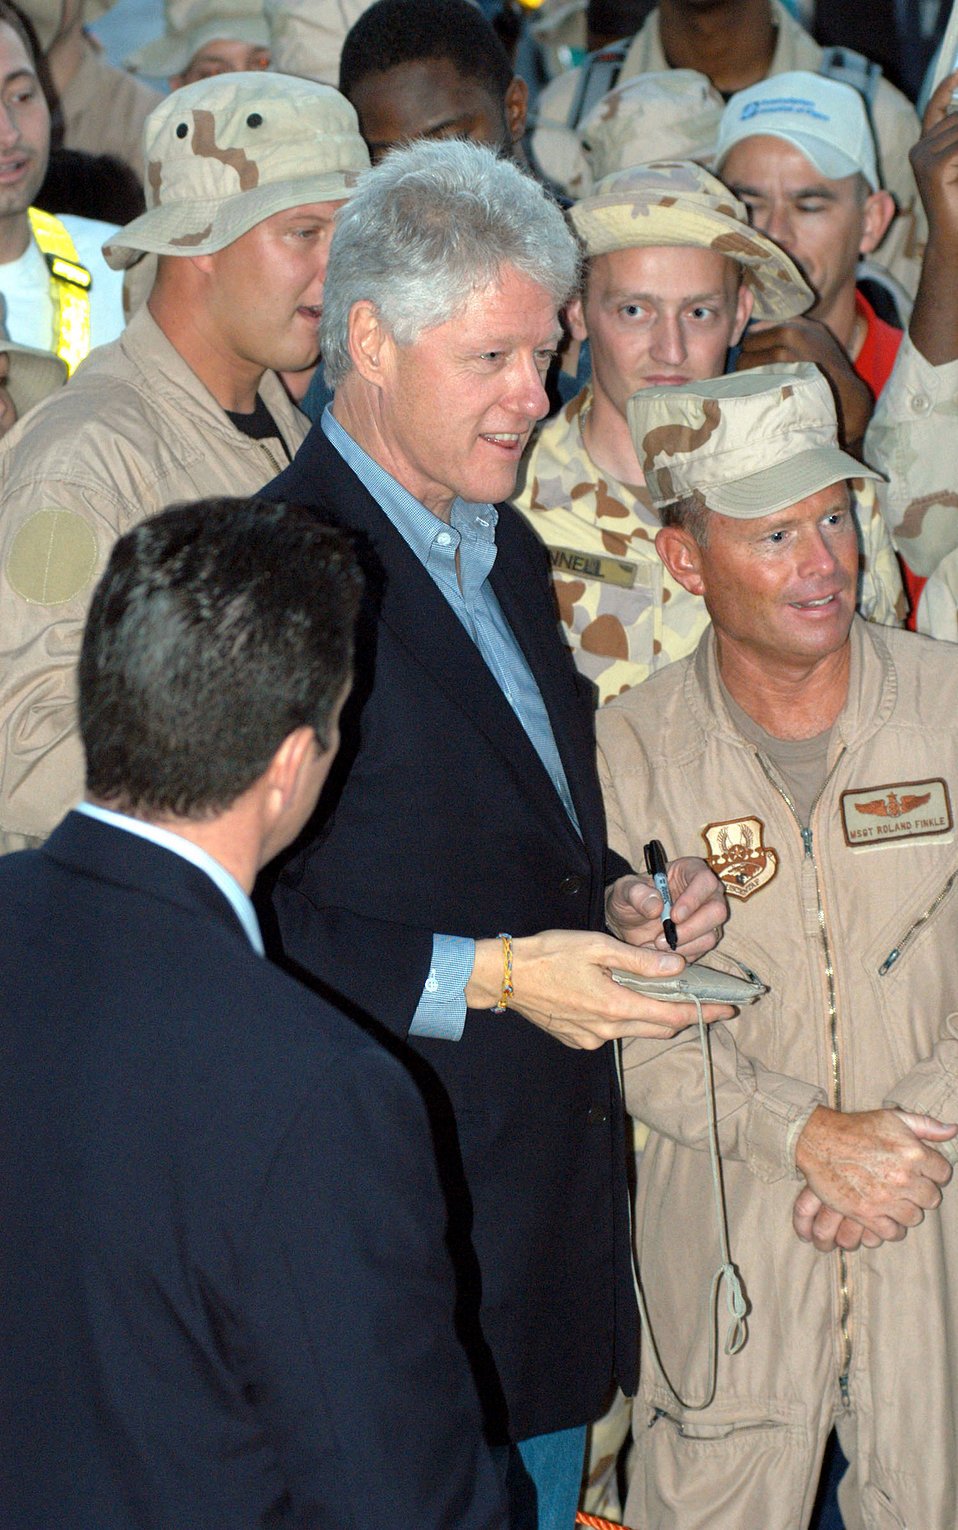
Paying a visit

SOUTHWEST ASIA -- Former President Bill Clinton greets airmen at a deployed location Jan. 12. The former president spent more than one hour shaking hands, signing mementos and posing for photographs during his visit.